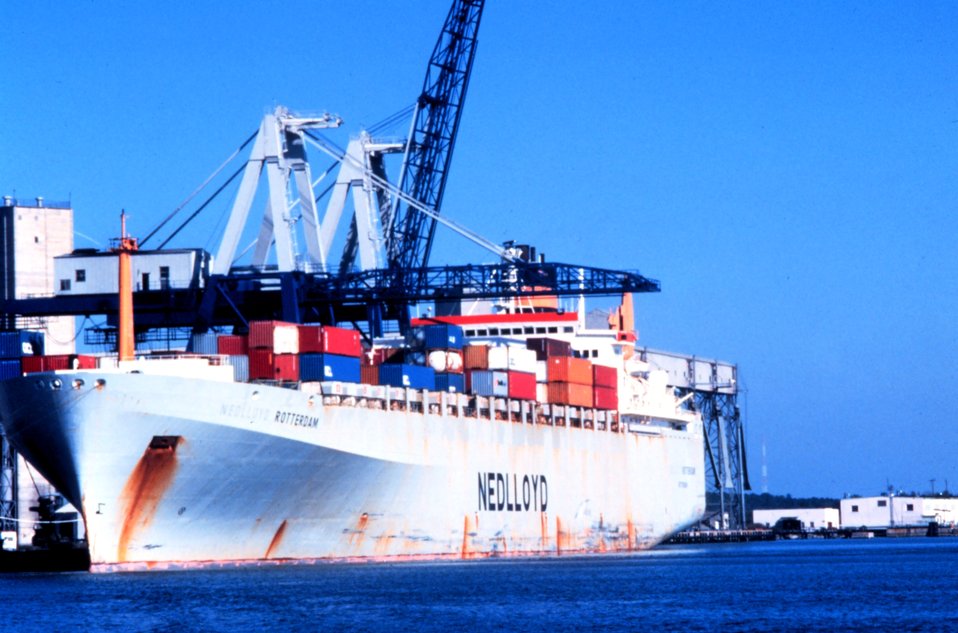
A containership at the Port of Charleston.